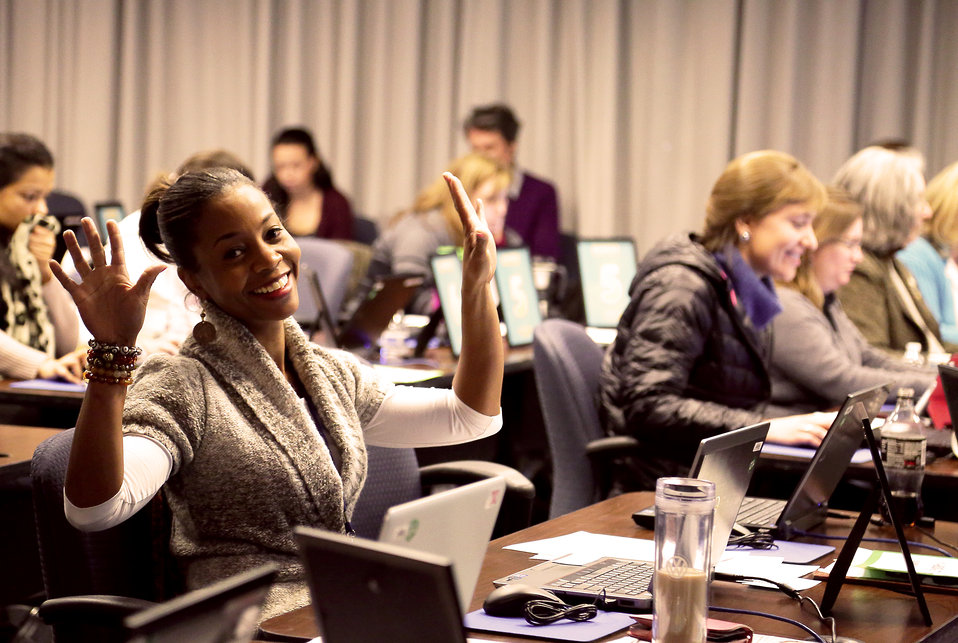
Chat Day 2014, NDFW

Chat Day Event held by the National Institute on Drug Abuse during its National Drug Facts Week Jan. 27-Feb. 2, 2014. Scientists from NIDA and other agencies answered questions about drugs from teens around the world on Jan. 29th in Rockville, Maryland.